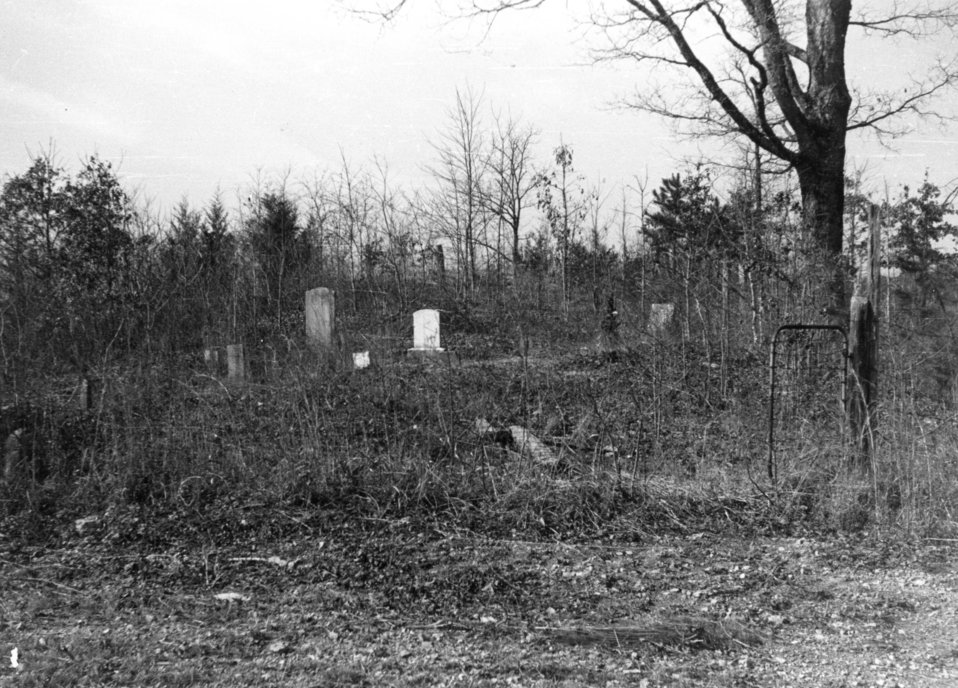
Early settlers at Oak Ridge